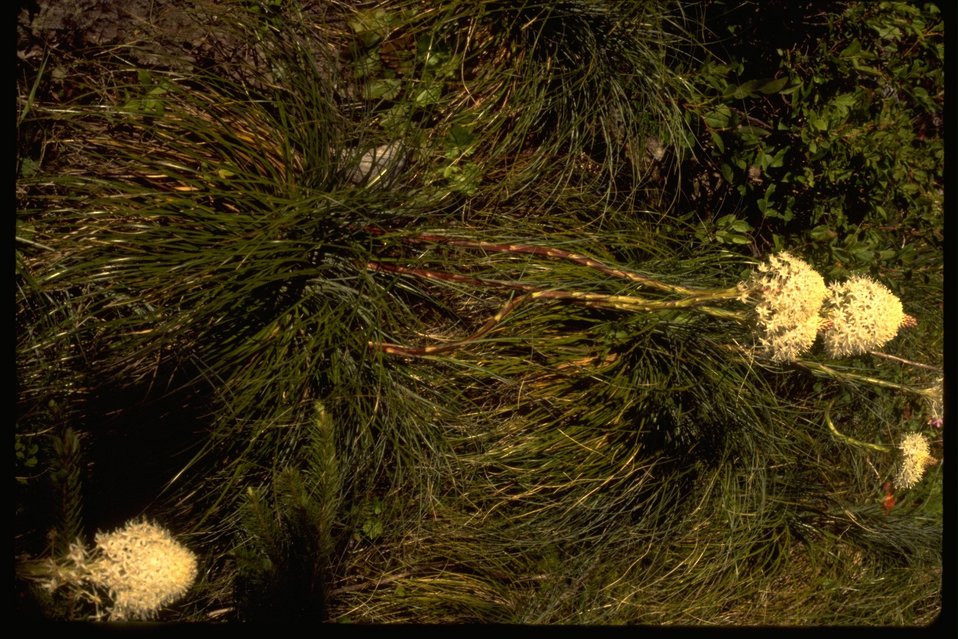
Plant: Bear Grass.